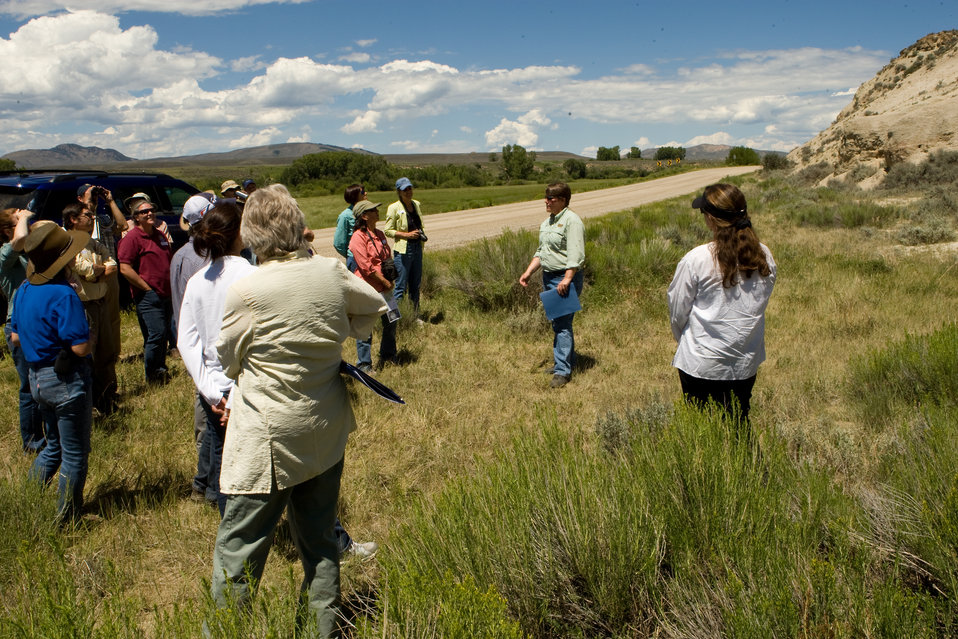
Colorado Rare Plant Conservation Initiative

The Colorado Rare Plant Conservation Initiative (RPCI) is a partnership of 23 statewide and regional agencies, private organizations, and academic institutions working to conserve 121 rare plants in Colorado. As part of these efforts the group developed the Colorado Rare Plant Conservation Strategy, developed Best Management Practices to reduce energy development impacts, addressed climate change, and developed focused strategies for the conservation of individual species at eight priority landscapes. The group has also worked to coordinate volunteer efforts for plant conservation across the state.